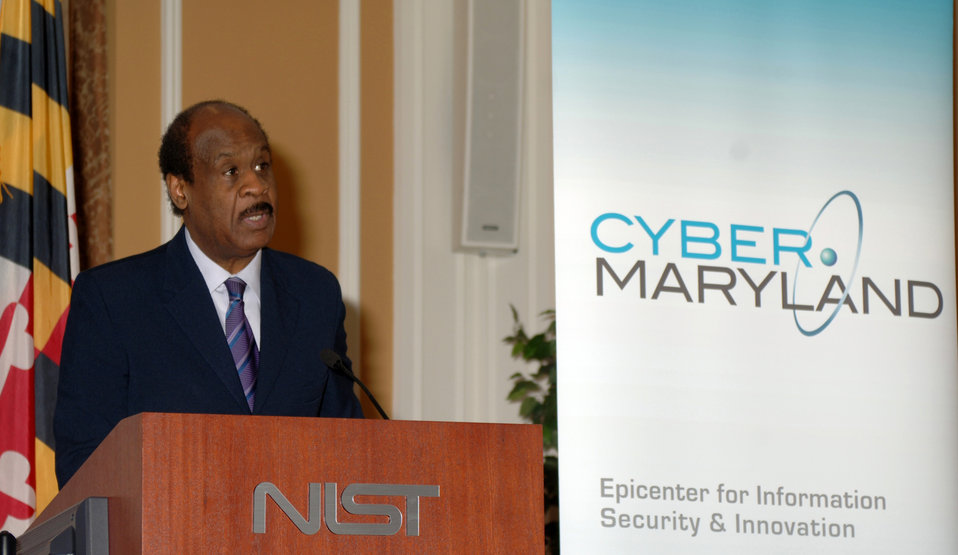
National Cybersecurity Center of Excellence MOU Signing

Montgomery County (MD) Executive Isiah Leggett speaks at New National Cybersecurity Center of Excellence MOU Signing at NIST.